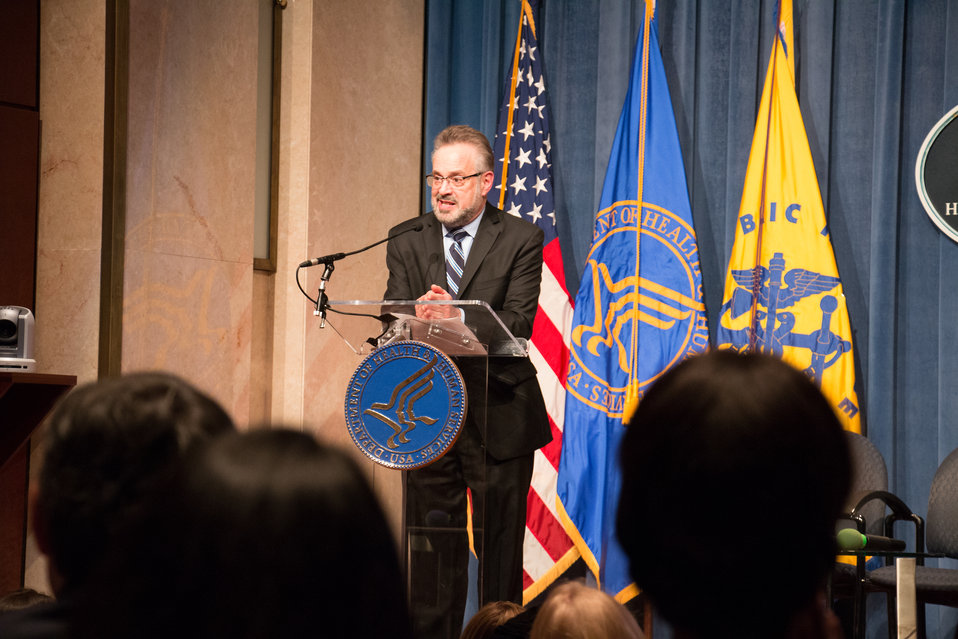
VHAP Launch (313 of 511)